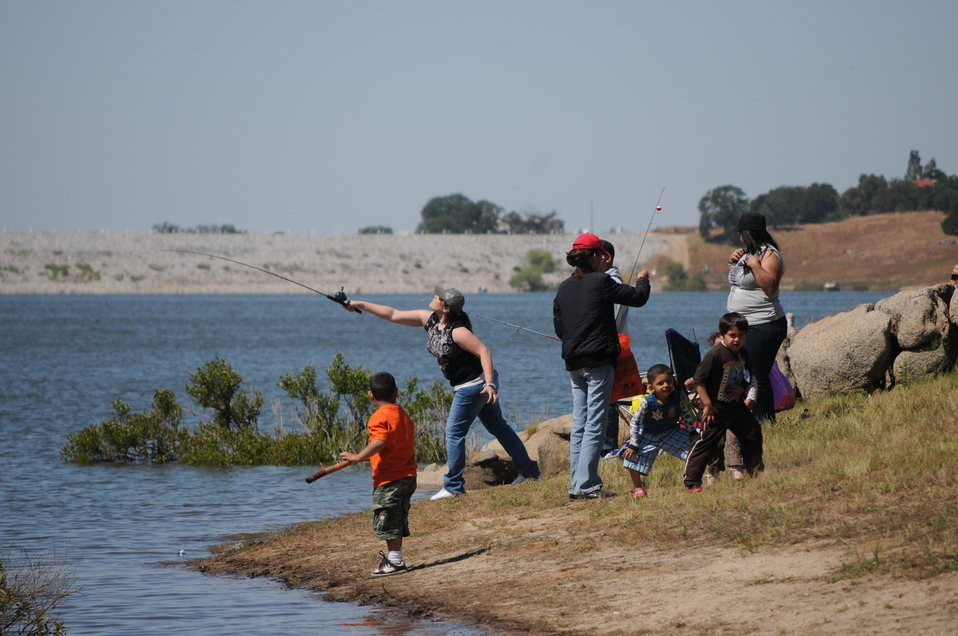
Kids Fishing Day at Hensley Lake

HENSLEY LAKE, Calif. (April 30, 2011) – Families enjoy a day of fishing at the lake during the 15th annual Kids Fishing Day here April 30. The Sacramento District’s Hensley and Eastman lakes take turns hosting the event, which provides free loaner gear and clinics on fishing techniques and water safety to help connect kids with the outdoors.